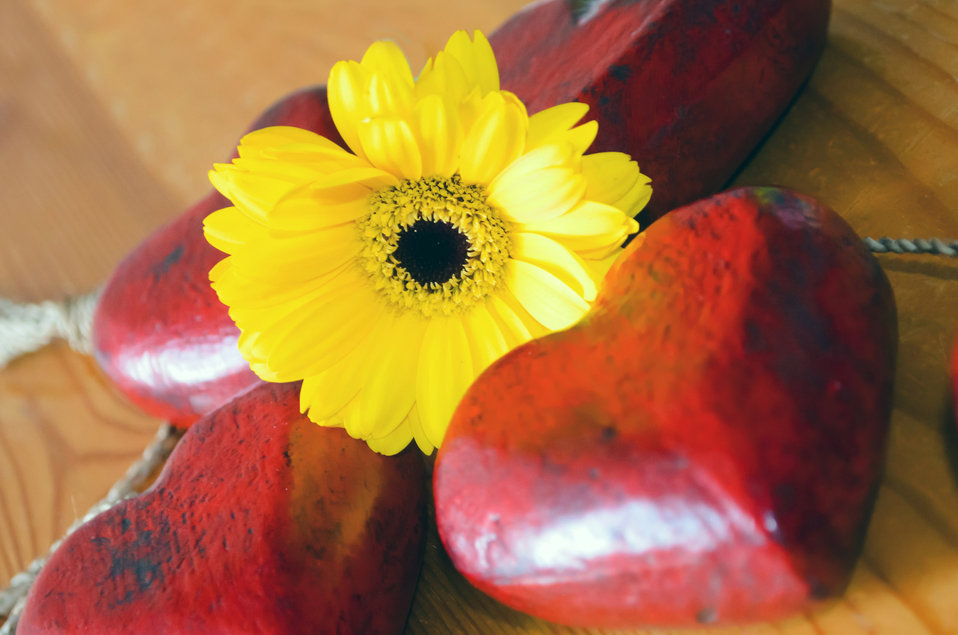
Yellow flower and red heart.